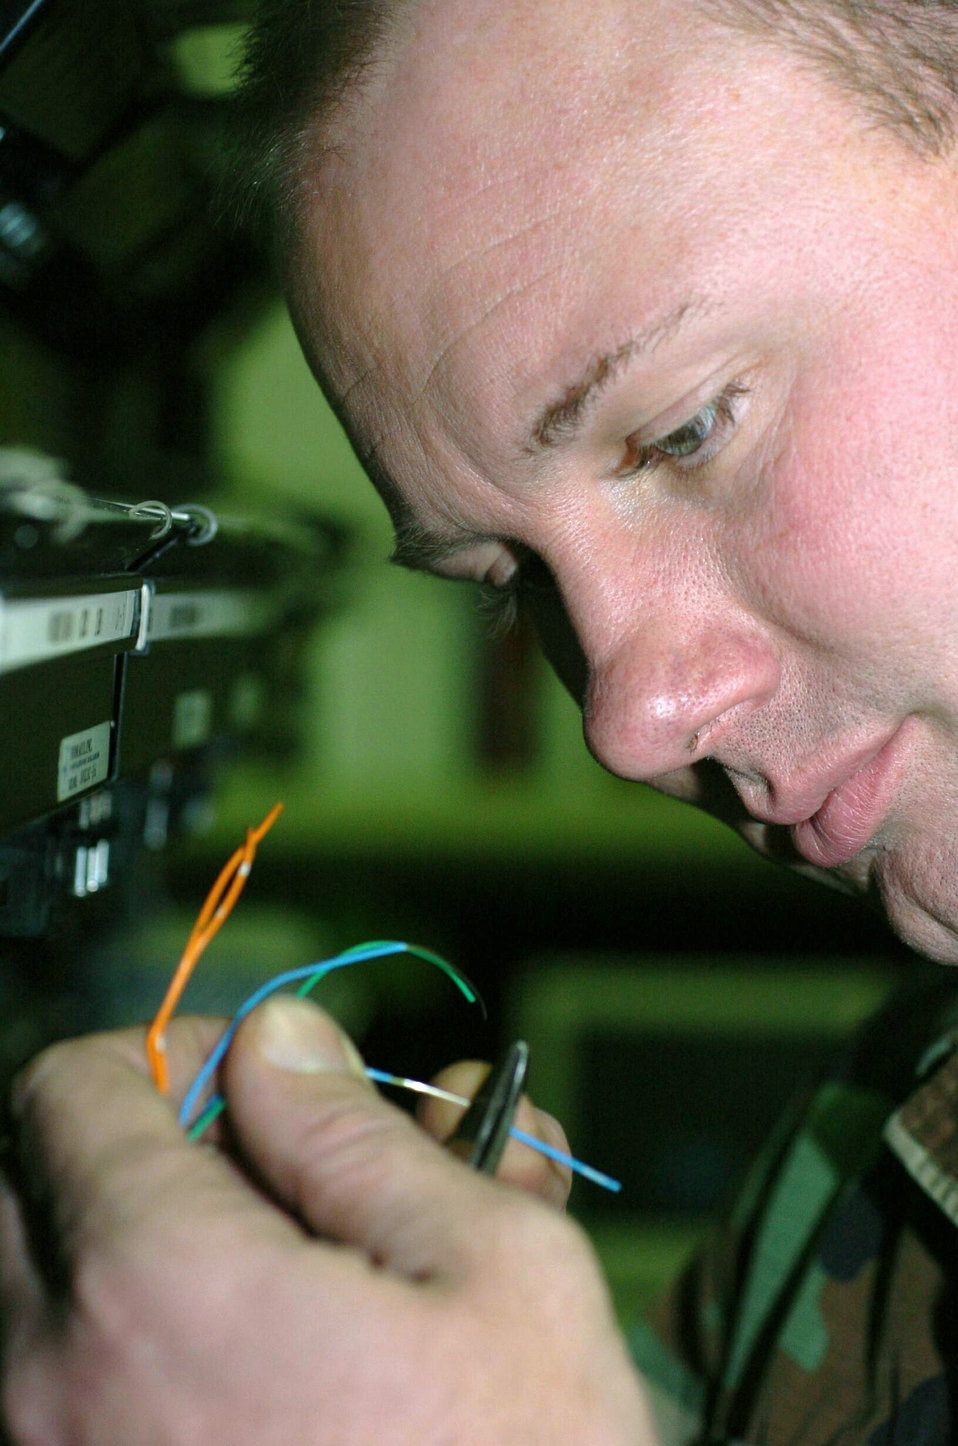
Don't cross wires

GWANGJU AIR BASE, South Korea -- Staff Sgt James E. Owen prepares jumper frame wires in order to run phone lines across the base here Dec. 9. He is part of the 3rd Air Expeditionary Group's, Communications Squadron in direct support for the 90th Fighter Operations Group. Sergeant Owen is deployed from the 354th Communications Squadron at Eielson Air Force Base, Alaska.